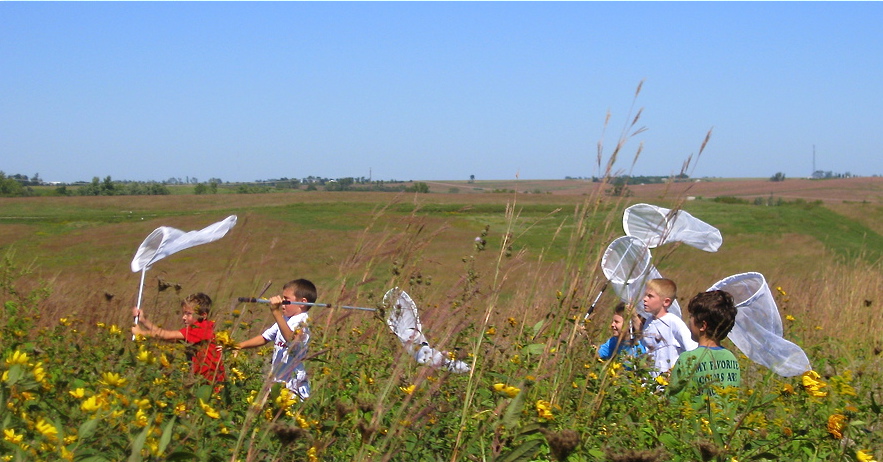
boys with nets